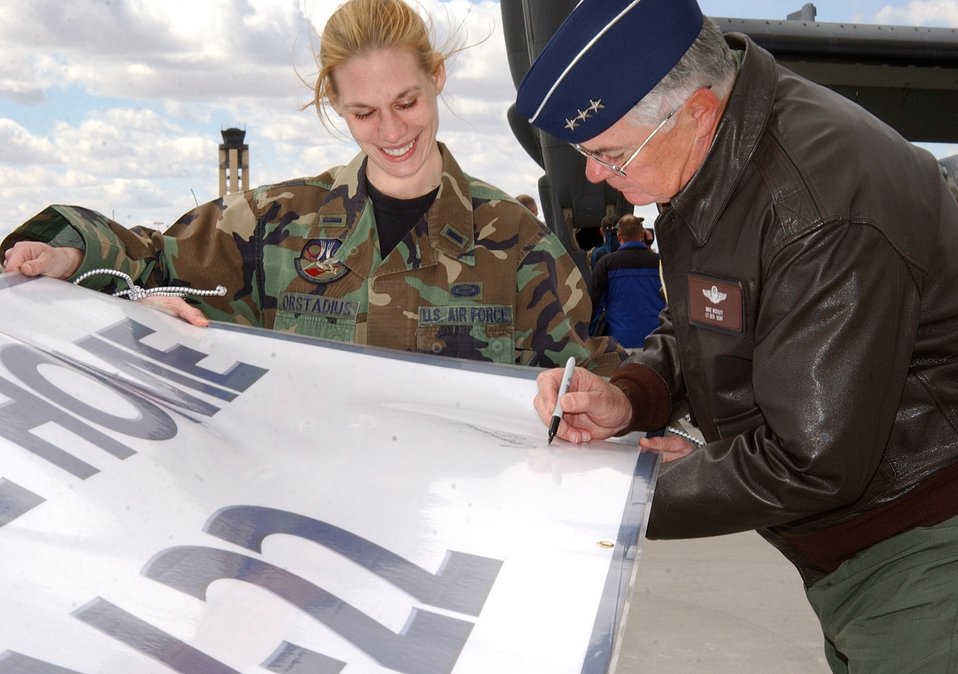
Osprey gets new nest

1st Lt. Anna Orstadius steadies a welcome banner while Lt. Gen. Mike Wooley, autographs it at Kirtland Air Force Base, N.M, after the first CV-22 Osprey arrived at the base Monday, March 20, 2006. General Wooley is commander of Air Force Special Operations Command. Lieutenant Orstadius is with the 58th Operational Support Squadron.